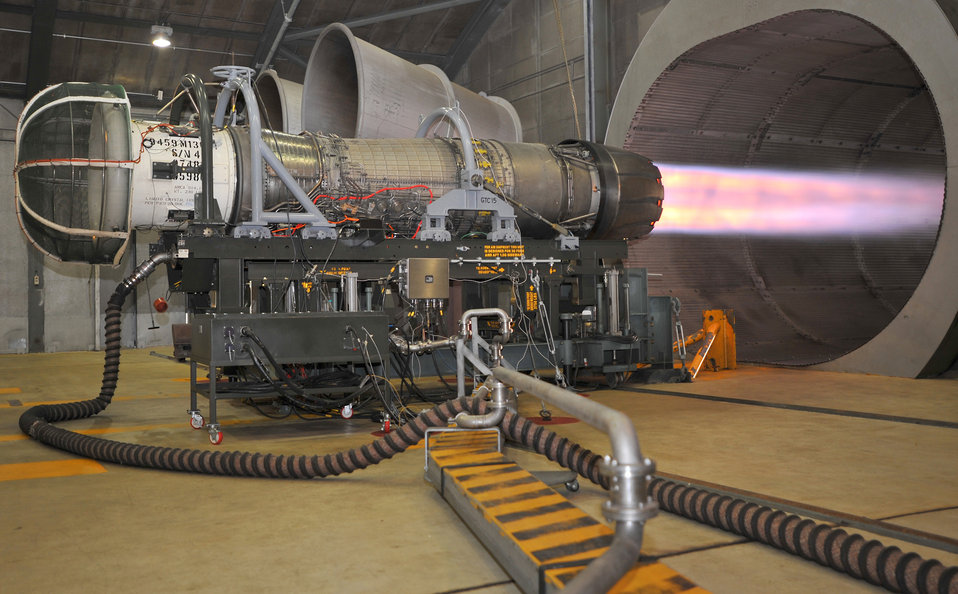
Testing 1-2-3

A turbine engine's afterburner functions are test fired June 27, 2011, inside the test facility at Spangdahlem Air Base, Germany.